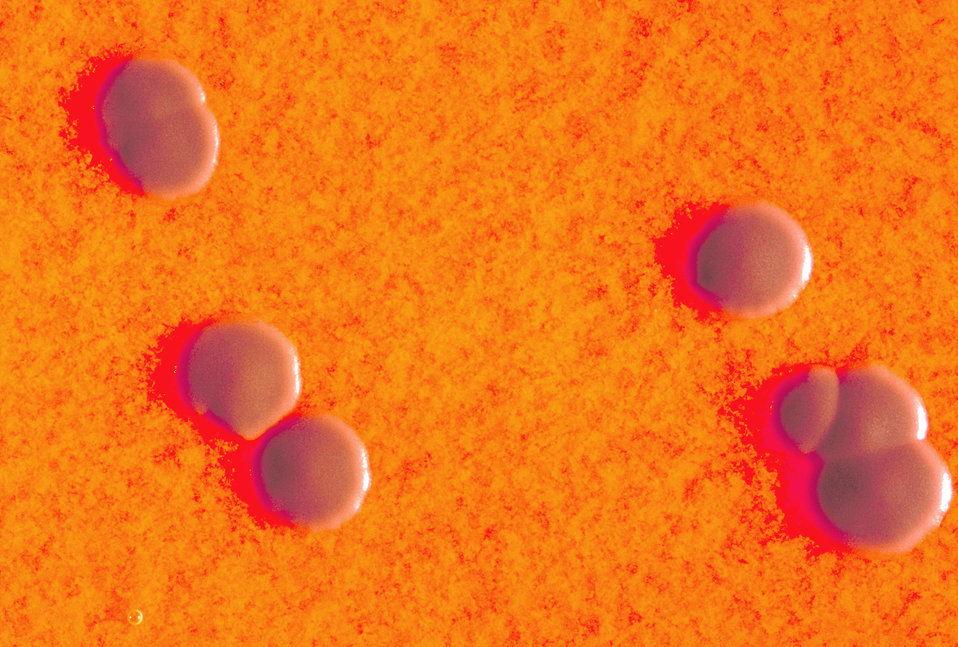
Cystine tellurite plate culture of Corynebacterium diphtheriae, displaying the mitis biotype colonial growth pattern.